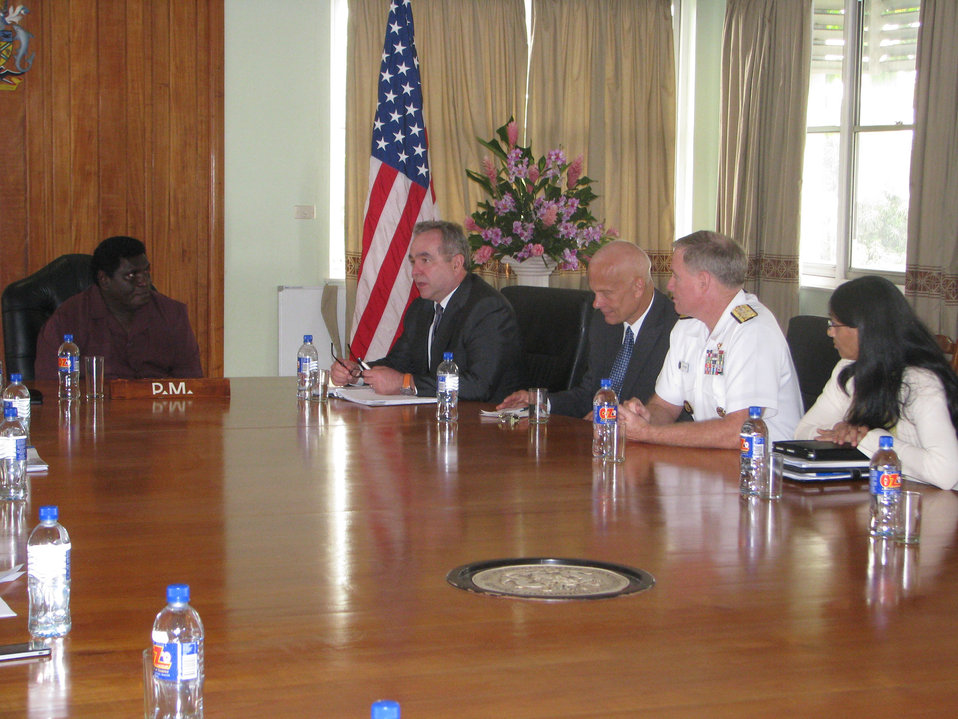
Assistant Secretary Campbell Addresses Solomon Islands Prime Minister Philip and His Cabinet

Assistant Secretary of State for East Asian and Pacific Affairs Kurt Campbell, right center, addresses Solomon Islands Prime Minister Danny Philip and his cabinet in Honiara, Solomon Islands, on June 29, 2011. Assistant Secretary Campbell is leading a U.S. delegation that includes Adm. Patrick Walsh, commander of U.S. Pacific Fleet, Office of the Secretary of Defense South/Southeast Asia Principal Director, Marine Corps Brig. Gen. Richard Simcock, and U.S. Agency for International Development (USAID) Assistant Administrator Nisha Biswal, on a visit throughout the South Pacific to engage in discussions to enhance bilateral political, economic, and security relations in the region.